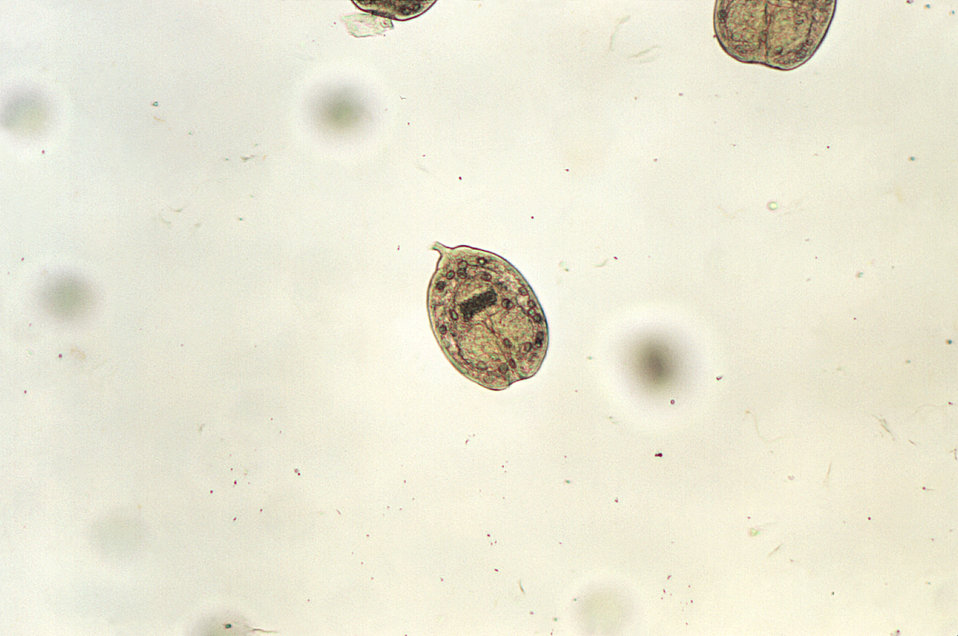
Under a low magnification of only 100X, this photomicrograph revealed three Echinococcus sp. protoscolices, which had been liberated from a hydatid cyst. During their life cycle within the host, these tapeworms pass through an egg stage, followed by an oncosphere-stage, which is followed by the formation of a cystic stage, resulting in a hydatid cyst. Rupture of these cysts releases these larval protoscolices, and a condition known as 'hydatid sand' (see PHIL 1450).